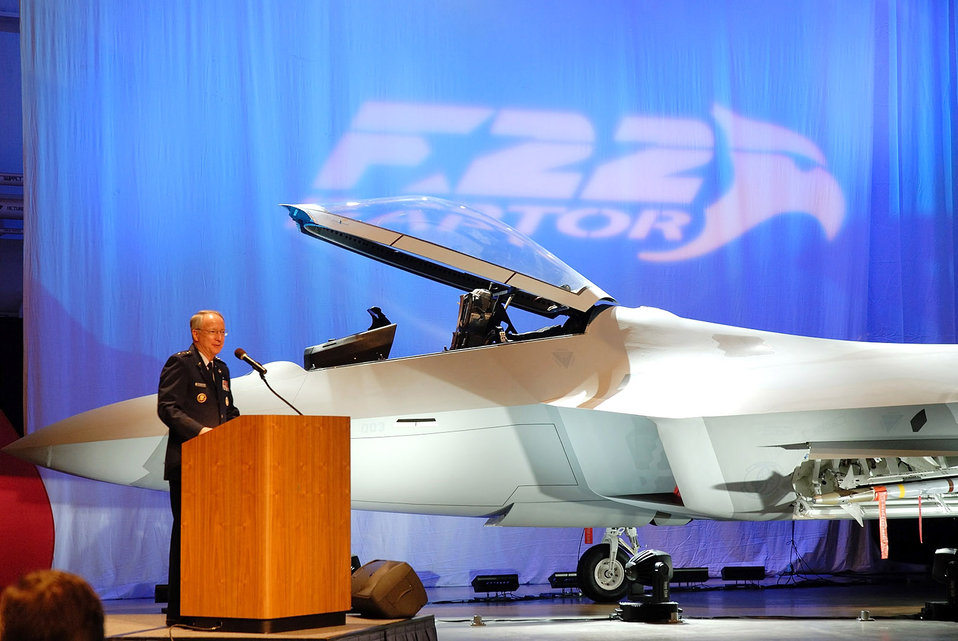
Museum unveils F-22 public display

Lt. Gen. Frank G. Klotz addresses the crowd during the F-22 Raptor Exhibit Opening Ceremony at the National Museum of the U.S. Air Force Jan. 18 at Dayton, Ohio. General Klotz is the the assistant vice chief of staff and director of the Air Force staff.